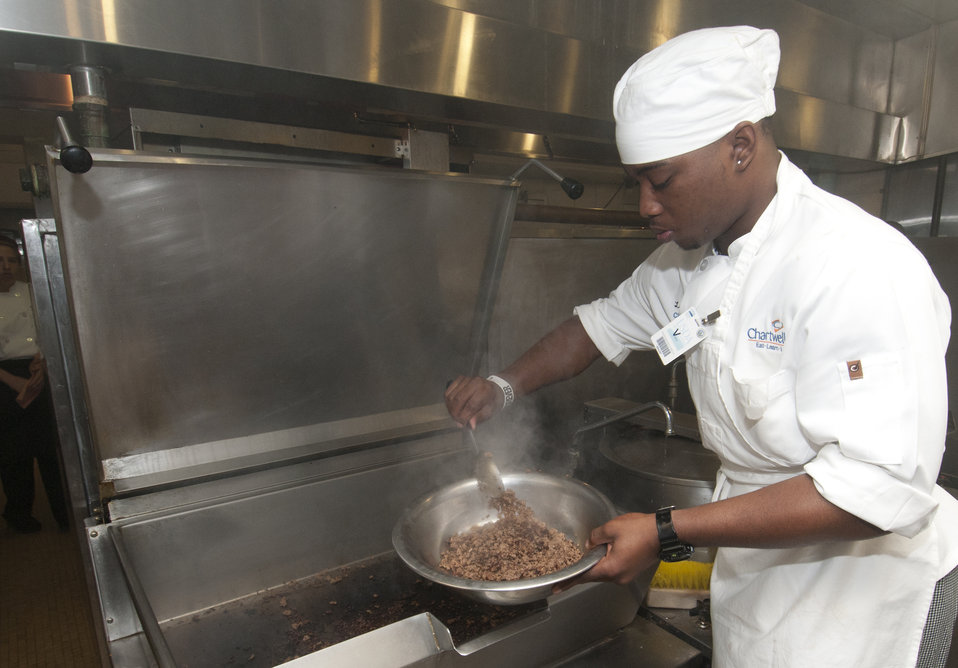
St. Louis' Chartwell student chef LA'More Wise finishes cooking ground beef for the Cooking Up Change, National Healthy Cooking Competition at the USDA in Washington, DC, on Monday, May 23, 2011.